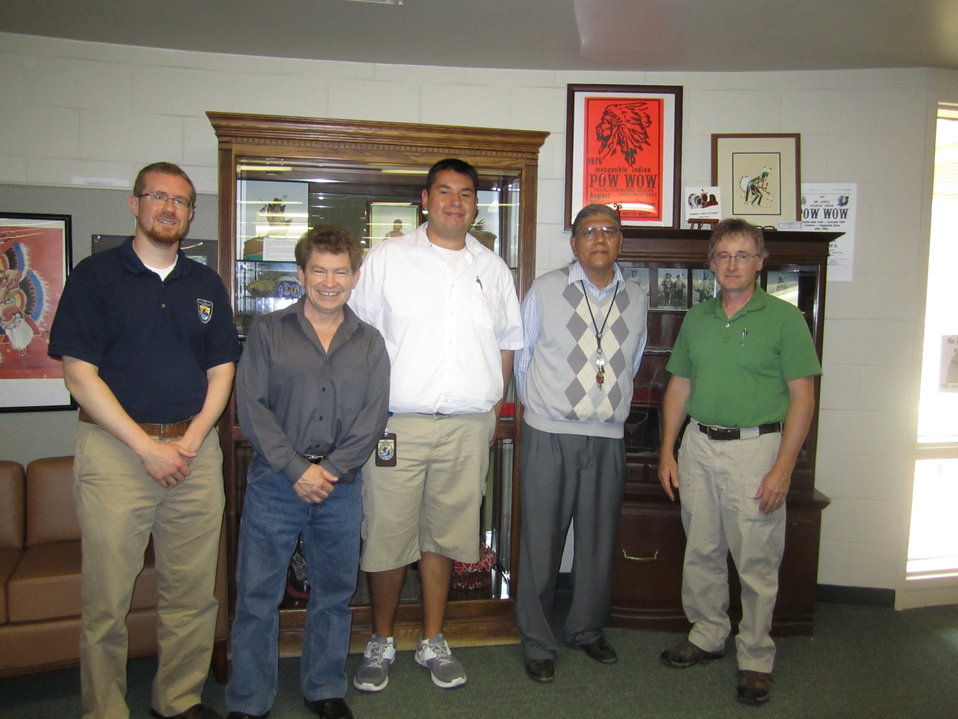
Sac and Fox Historic Museum

FWS staff meet with James Buffalo, Director of Historic Preservation at the Sac and Fox Museum, to learn more about the Black Hawk War and the Battle of Bad Axe.